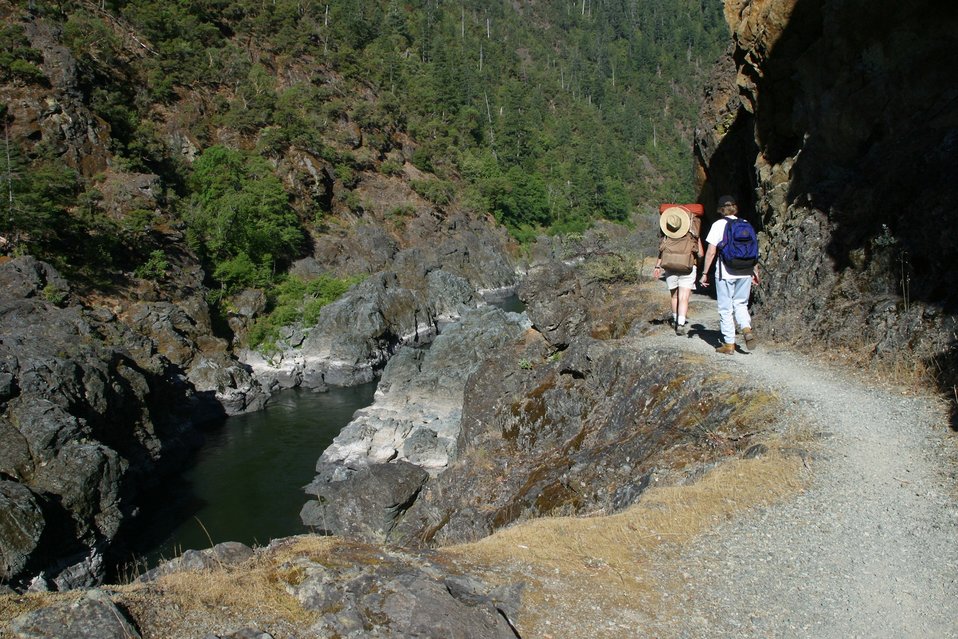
Hiking the Rogue River Trail between Mule Creek and Blossom Rapids.